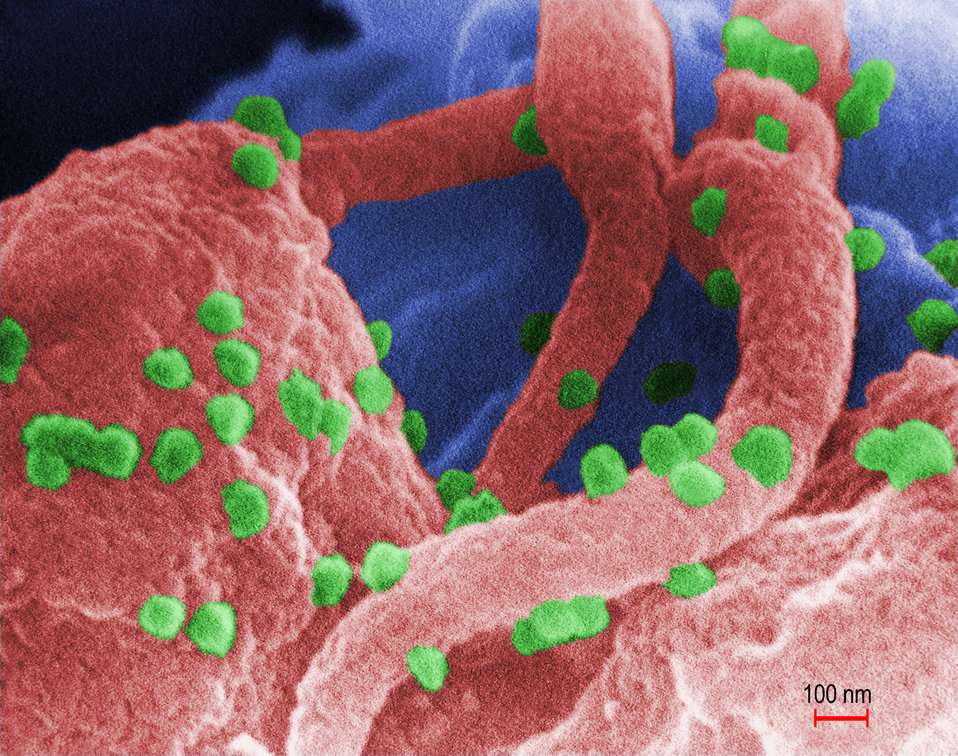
This scanning electron micrograph revealed the presence of the human immunodeficiency virus (HIV-1), (spherical in appearance), which had been co-cultivated with human lymphocytes. Note the lymphocyte in the lower left, and some of its extended pseudopodia. HIV-1 virions can be seen on the surface of this lymphocyte. See PHIL 1843 for another view of this electron microscopic scenario.